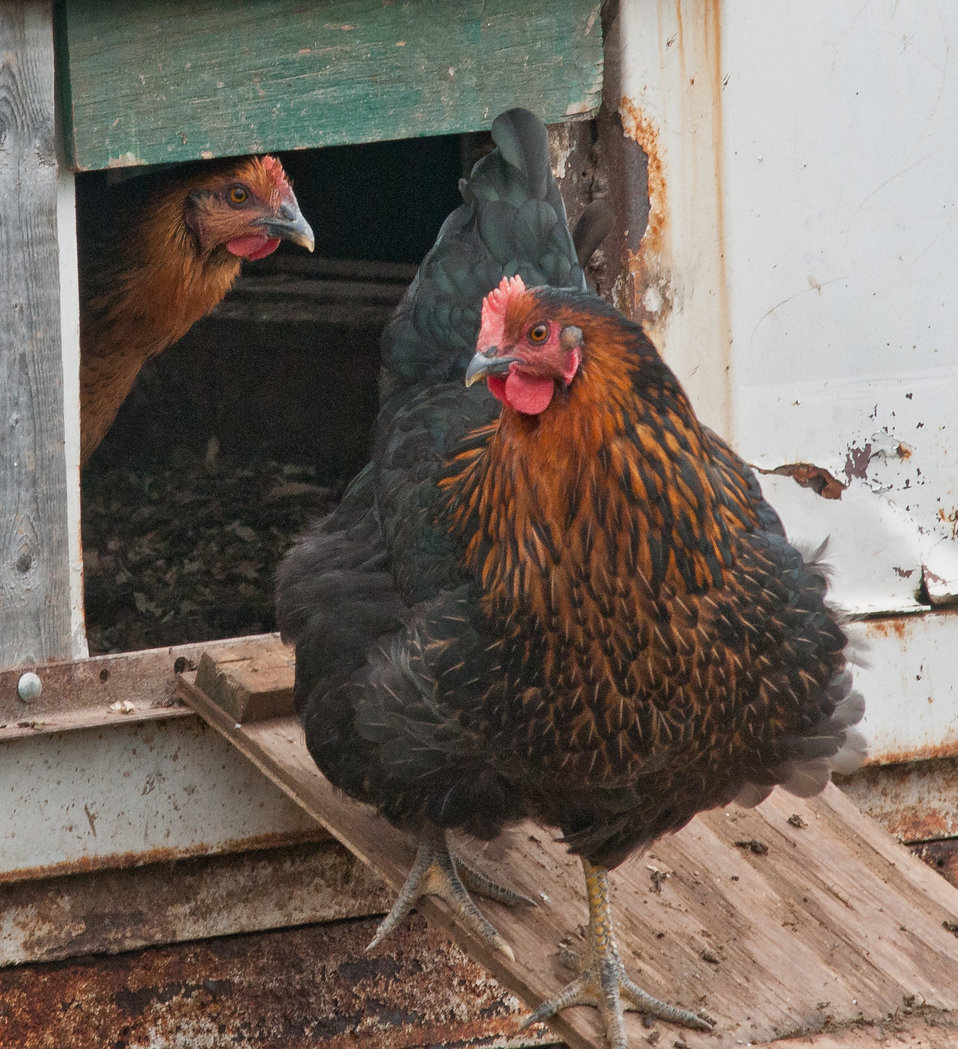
Layer hens freely enter and exit discarded horse trailers have been repurposed as safe sturdy mobile coops that can be easily relocated on Nick’s Organic Farm, in Adamstown, MD, on Friday, July 12, 2013. The farm, owned by Nick Maravell, produces Black Angus beef, chicken, turkey, eggs, hay, soybeans, corn, alfalfa, orchard grass, rye; and other crops. The cattle are100% grass-fed receiving certified organic pasture, certified organic hay (in winter), water and mineral salts mixed with sea kelp. The cattle are not fed hormones, antibiotics or animal products. Poultry feed from grain is ground from organic grain. The poultry also graze on organic pastures. The farm has conducted on-farm research with federal, state and non-profit agencies to refine organic practices. An organization such as the U.S. Department of Agriculture (USDA) Agricultural Research Service (ARS) center in Beltsville has been able to conduct research to improve organic crops and to breed and manage the cattle so that they have.